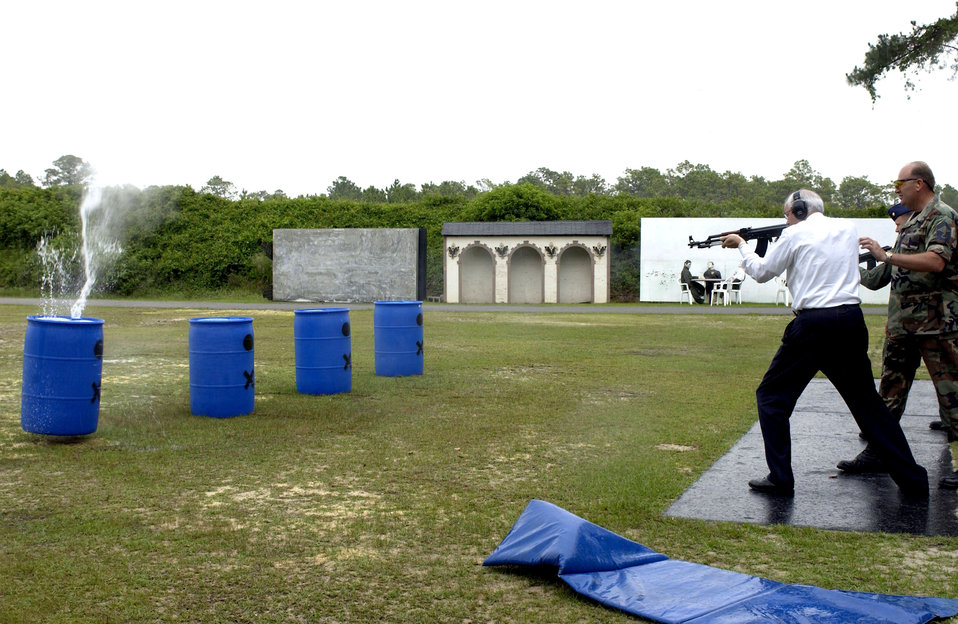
Secretary Wynne tours special ops command

Secretary of the Air Force Michael W. Wynne fires an AK-47 assault rifle at a water-filled target at the Air Force Special Operations School at Hurlburt Field, Fla., on Tuesday, May 9, 2006. Senior Master Sgt. Steven Moore watches for safety and proper use of the weapon . Sergeant Moore is with the asymmetric warfare division at the school.